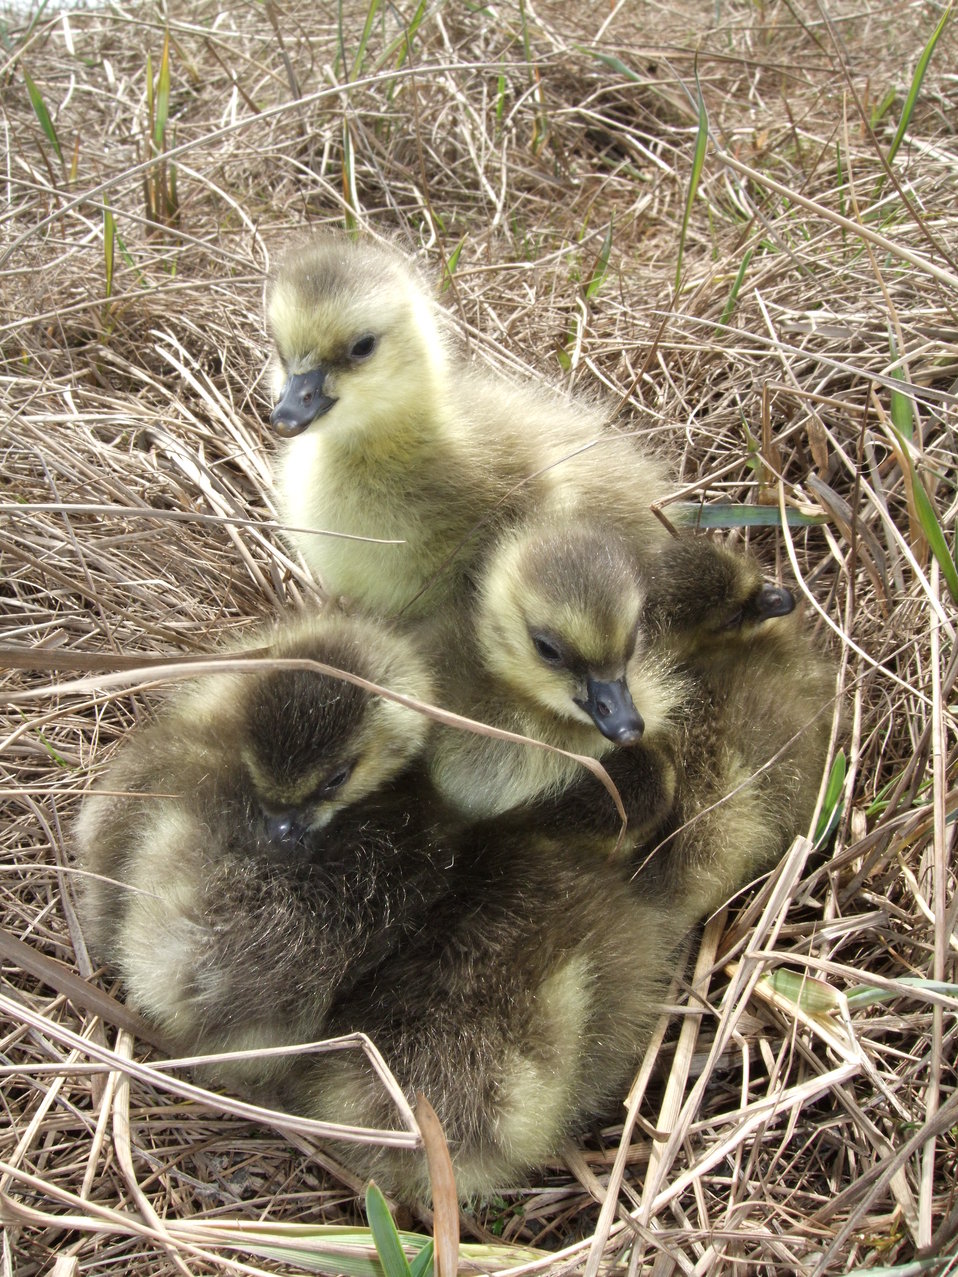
Cackler goslings

USFWS Yukon Delta NWR